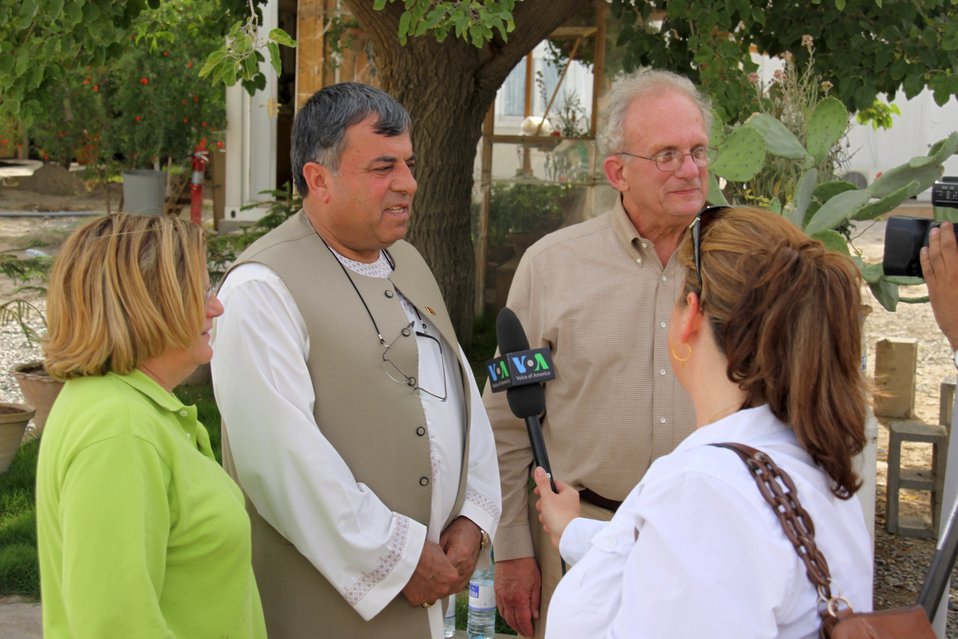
Meeting with Local Leaders in Kandahar